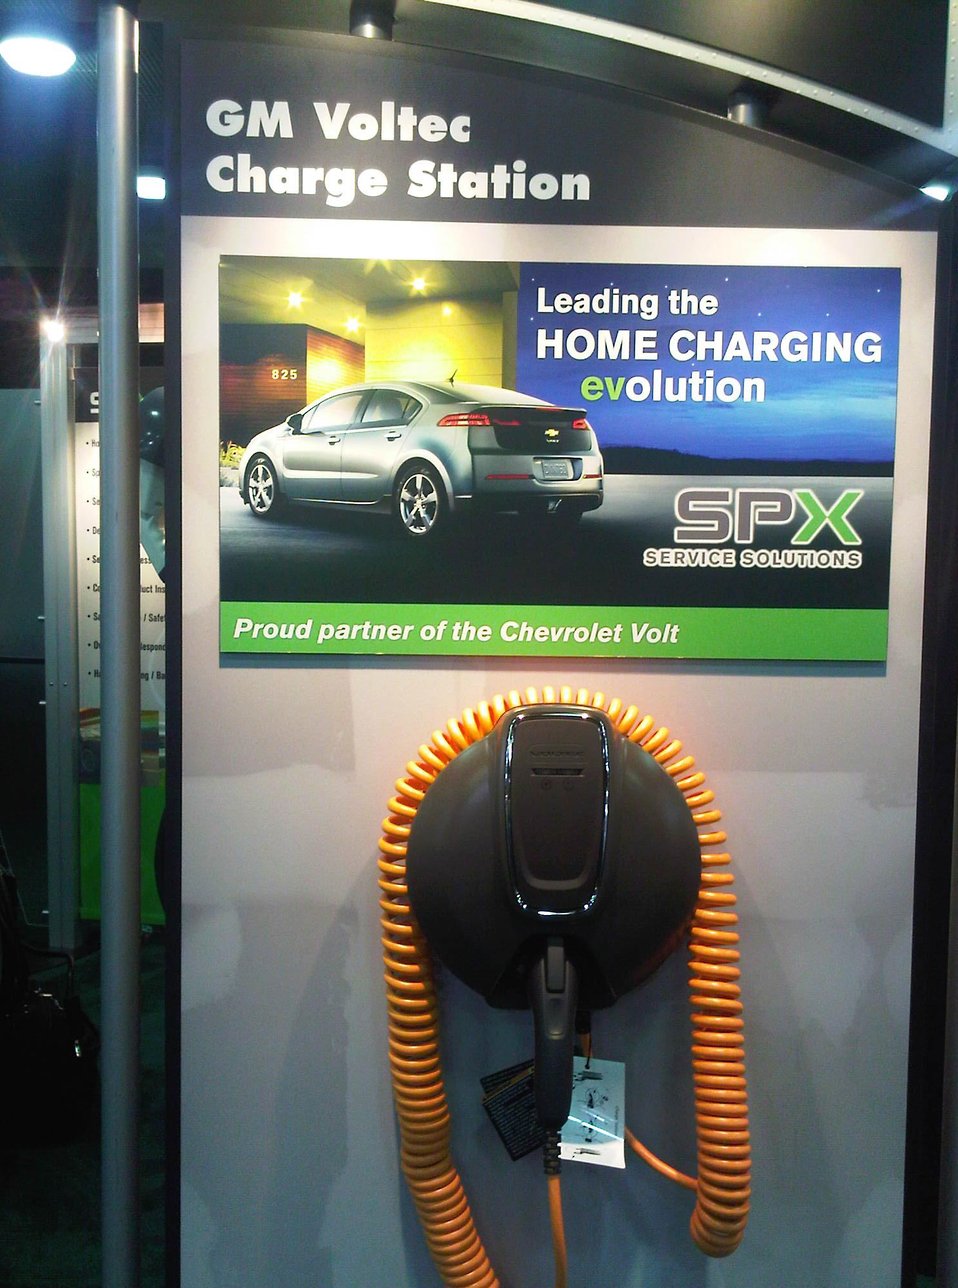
The 2011 Detroit Auto Show